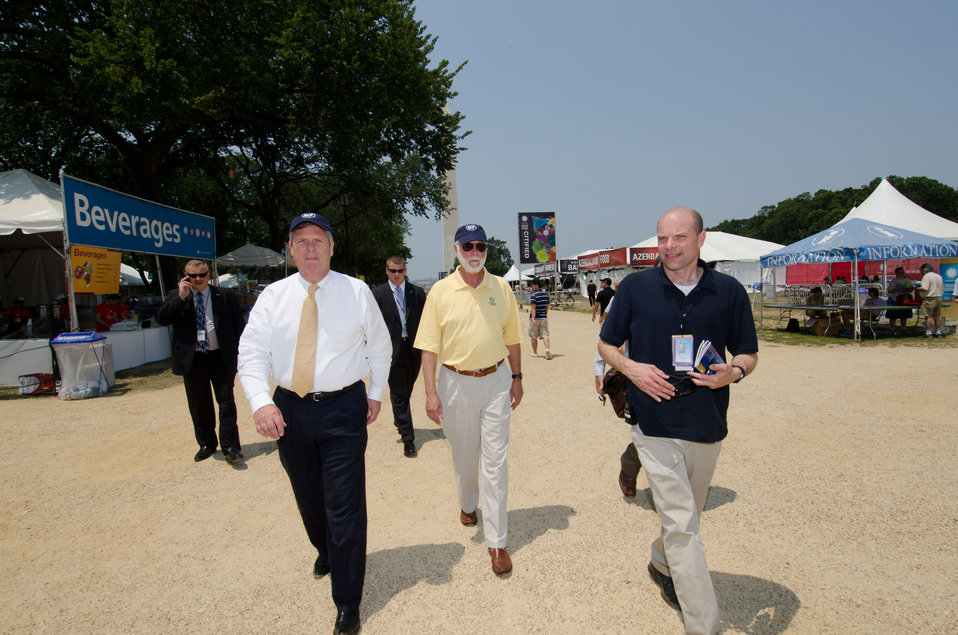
Smithsonian Institution’s Stephen Kidd (right), guides Agriculture Secretary Tom Vilsack (white shirt) and Smithsonian Institution Secretary G. Wayne Clough to the Campus and Community themed section of the 2012 Smithsonian Folklife Festival, on the National Mall in Washington, D.C. on Friday, June 29, 2012 Near by is the Mississippi State University Mobile Veterinary Clinic that serves the Northern Mississippi area by providing Spay and neuter services to those in need, and provides medical experience for students. One of the three themes this year is “Campus and Community.” It celebrates the 150 years of the USDA and the Land-Grant University System. The U.S. Department of Agriculture (USDA) and the Land-Grant system extend education across the country, contributing to American agriculture success and rural prosperity. “Campus and Community” has demonstrations, discussions, hands-on activities, and entertainment to that showcase the many ways that this partnership works to improve American agriculture and rural life.